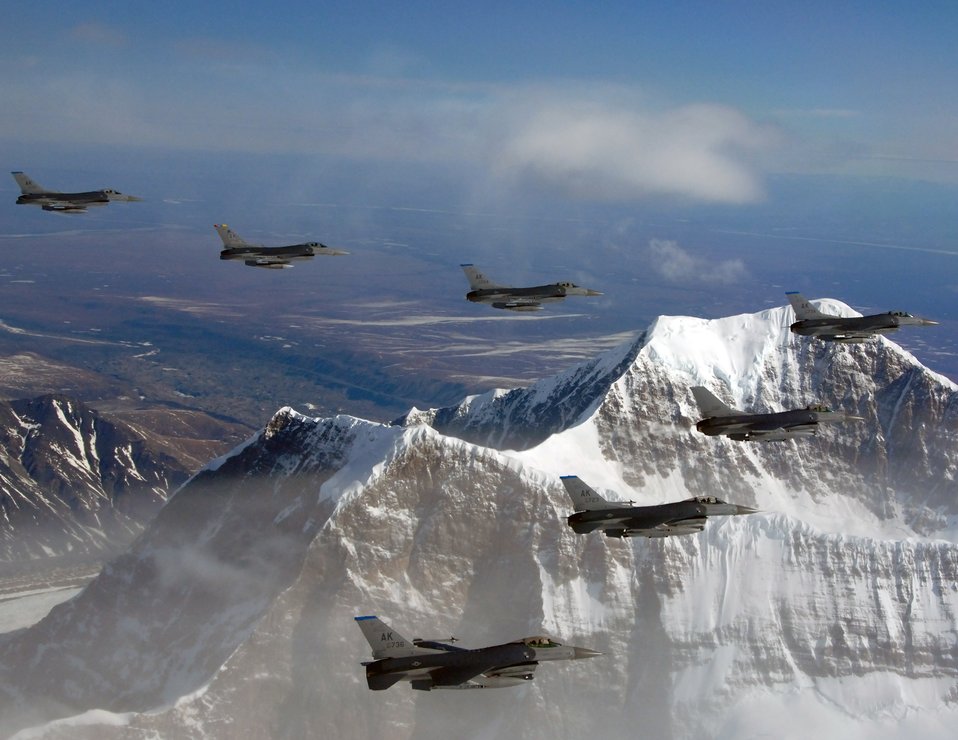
Show of force

F-16 Fighting Falcons fly in formation April 25 over the Pacific Alaska Range Complex. The F-16s are from the 18th Fighter Squadron at Eielson Air Force Base, Alaska. Members of the 18th FS conduct air operations for combat-ready F-16s, working closely with the 355th Fighter Squadron to provide close-air support, forward-air control (airborne), battlefield air interdiction, and offensive counter air.